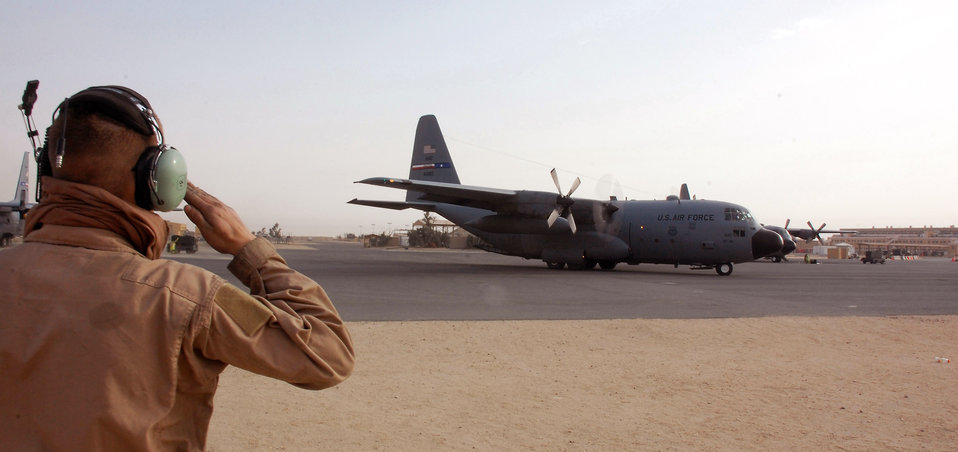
March 6 airpower summary: C-130s support coaliton forces

Airman 1st Class Buddy Bewick, 386th Expeditionary Aircraft Maintenance Squadron salutes the aircraft commander of a C-130 Hercules at a Southwest Asia air base. The aircraft is heading for a mission into Iraq for Operation Iraqi Freedom.